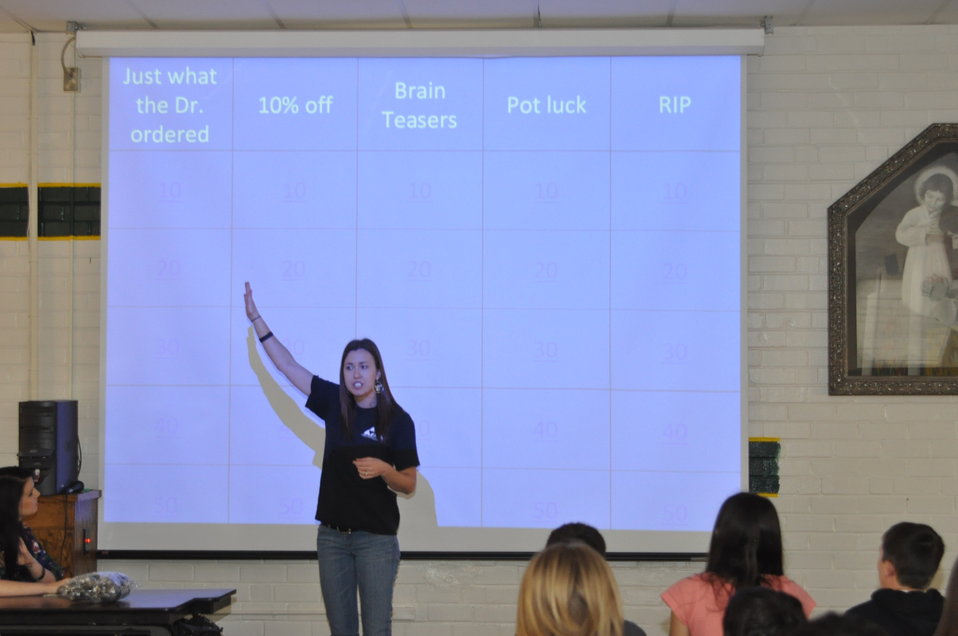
Shattering the Myths in AZ

In honor of the 2014 National Drug Facts Week, Casa Grande Alliance went to St. Anthony of Padua School in Casa Grande, AZ and played Drug Facts Chat Jeopardy! The students learned that M.O.S.T. (Our Social Norm Campaign that stands for Making Our Students Think) Casa Grande youth don't use drugs or drink alcohol! The students were also able to get their drug and alcohol questions answered and boy did they have some good ones to ask!